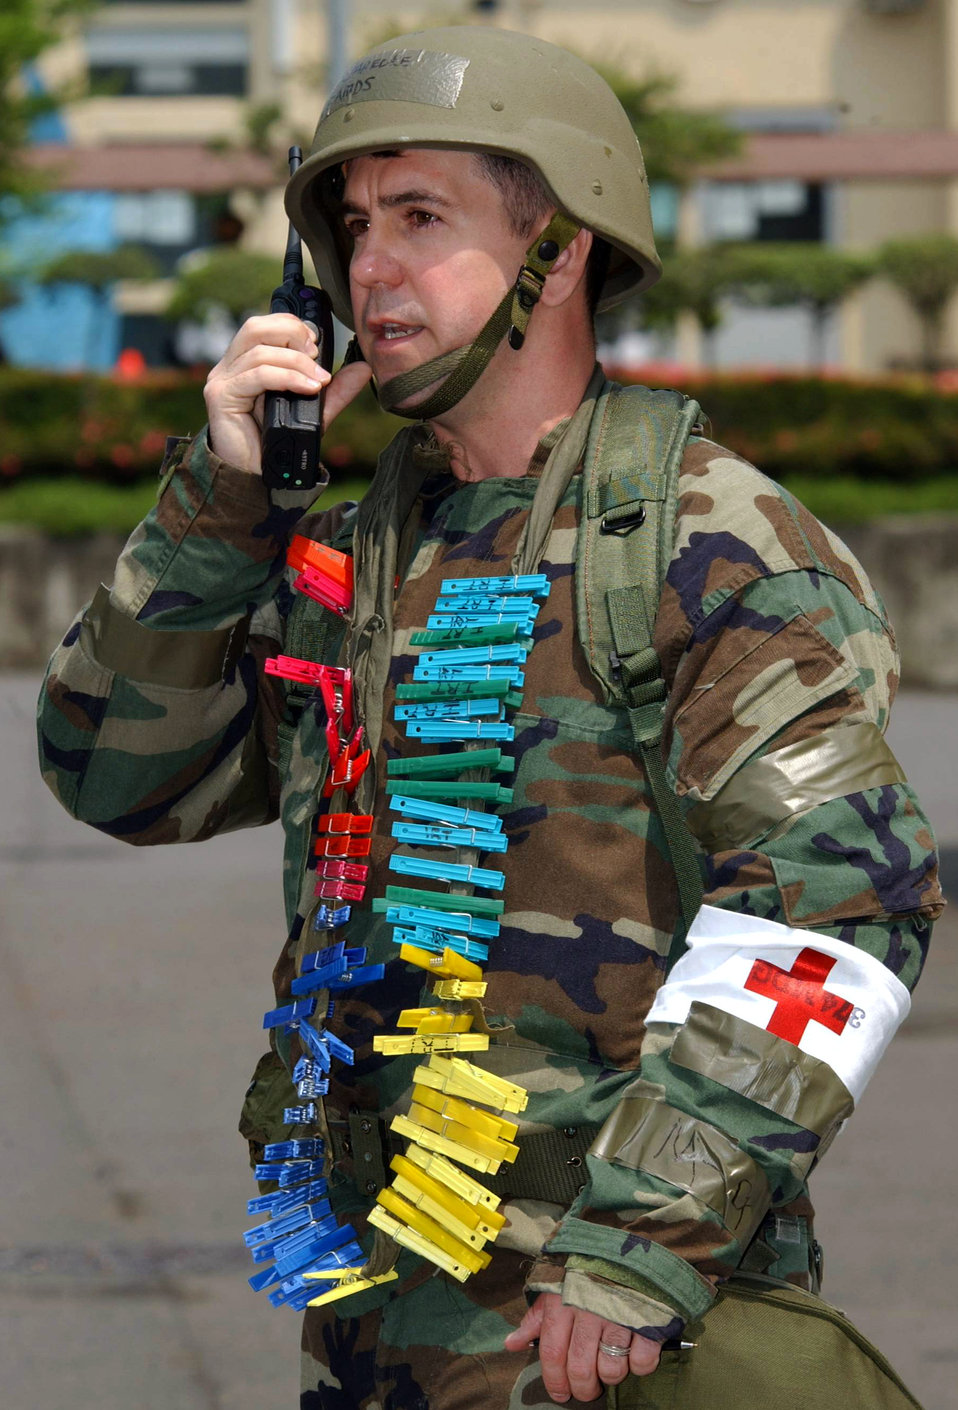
Colorful caller

YOKOTA AIR BASE, Japan (AFPN) -- Capt. Anthony Jarecke radios command center officials during an operational readiness exercise here. Jarecke is a member of a triage team from the base's 374th Medical Group. The triage team treated numerous people with various simulated injuries during the training. The color-coded clothes pins around Jarecke's neck are used to categorize different levels of triage.